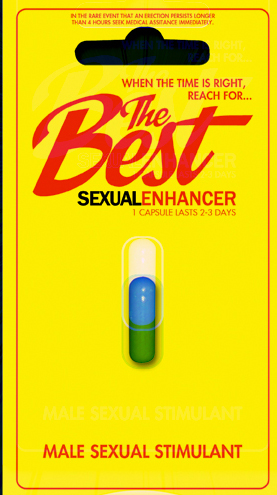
THE BEST Enhancer

March 28, 2011 - The FDA is advising consumers not to purchase or use 'THE BEST Enhancer,' a product promoted and sold for weight loss. The product was found to contain undeclared sulfoaildenafil. For more information, go to www.fda.gov/safety/recalls/ucm249126.htm

And read this Consumer Update: Beware of Fraudulent ‘Dietary Supplements’